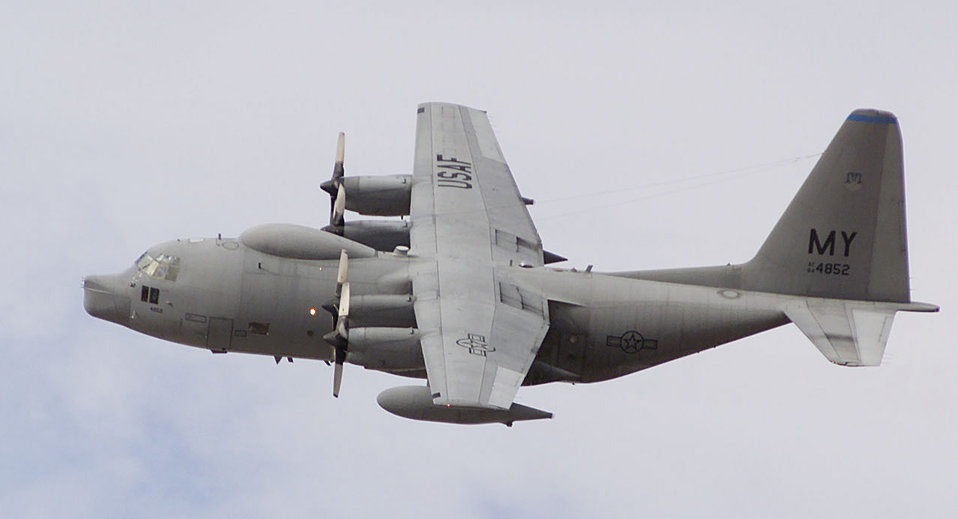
The King

FILE PHOTO -- An HC-130P King from the 71st Rescue Recovery Squadron, Moody Air Force Base, Ga., makes a low-level pass after releasing pararescue members form the 3rd Battalion, 3rd Special Forces out of Fort Bragg, N.C. The HC-130P King deploys worldwide to provide combat search and rescue coverage for U.S. and allied forces. Combat search and rescue missions include flying low-level, preferably at night aided with night vision goggles, to an objective area where aerial refueling of a rescue helicopter is performed or pararescuemen are deployed. The secondary mission of the HC-130P is peacetime search and rescue. HC-130P aircraft and crews are uniquely trained and equipped for search and rescue in all types of terrain including artic, mountain, and maritime. Peacetime search and rescue missions may include searching for downed or missing aircraft, sinking or missing water vessels, or missing persons. The HC-130P can deploy parascuemen to a survivor, escort helicopter to a survivor, or airdrop survival equipment to a survivor.